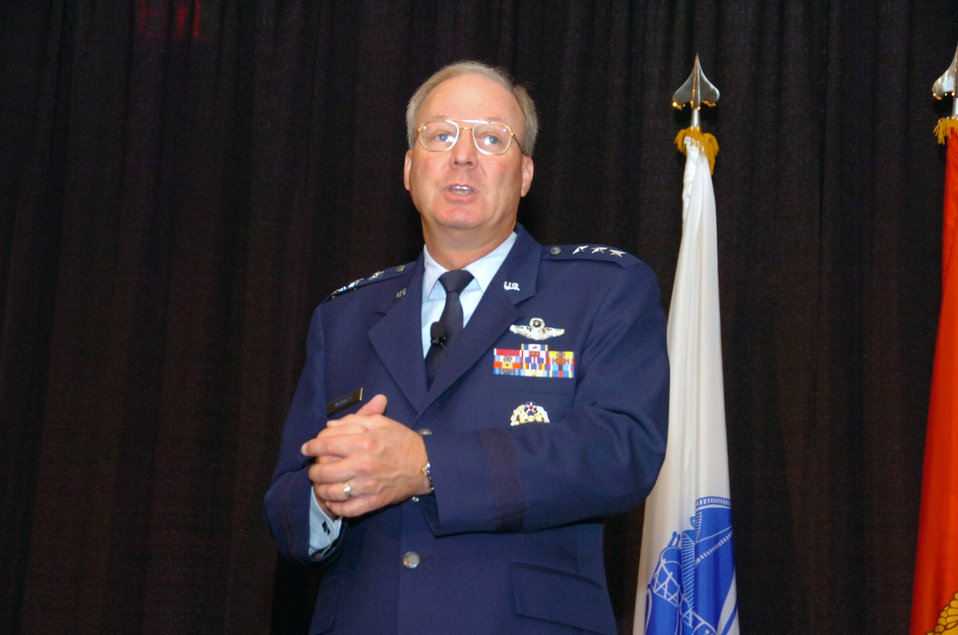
National Guard Bureau Joint Family Program Volunteer Workshop and Youth Symposium

Lt. Gen. Craig McKinley, the director of the Air National Guard, addressed 1,500 people gathered for the largest-ever National Guard Bureau Joint Family Program Volunteer Workshop and Youth Symposium in St. Louis July 21. The secretary of defense has nominated General McKinley to be the next chief of the National Guard Bureau and to be the National Guard's first four-star general.